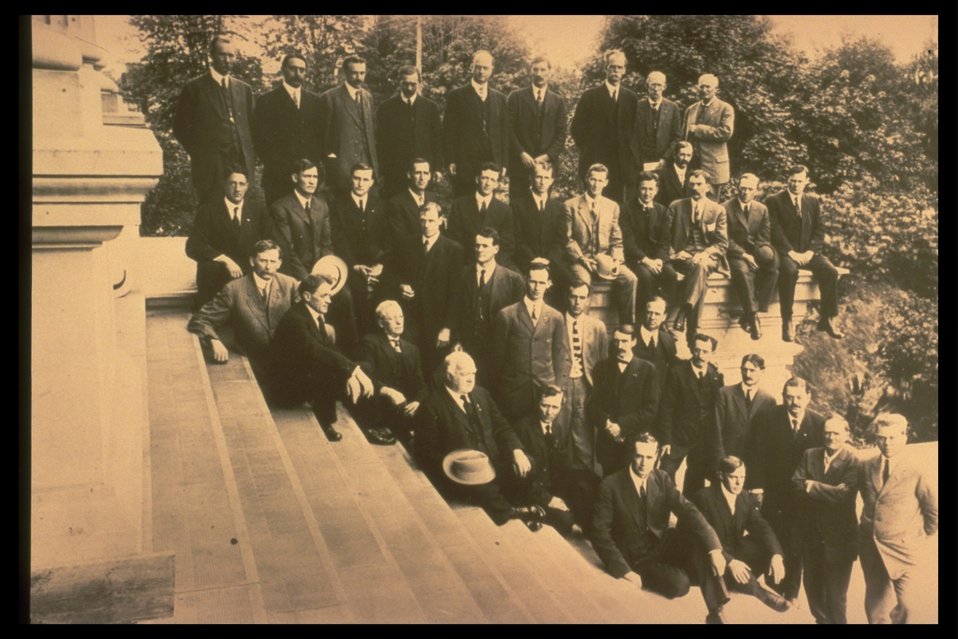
Black and white photo of business men posing on steps.